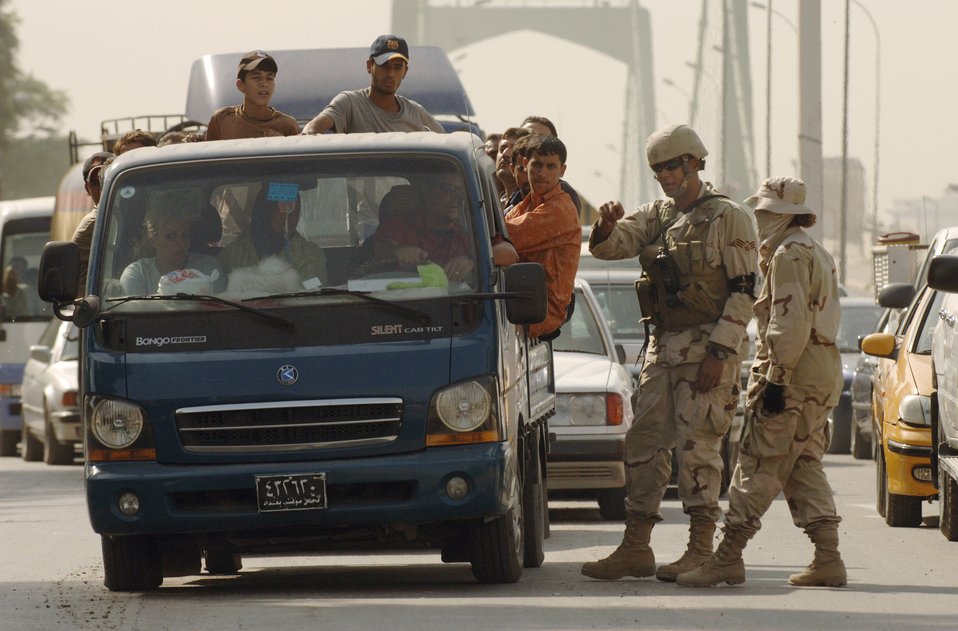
Check Point checking

Patrolling inside Baghdad's International Zone, an Airman and an Iraqi interpreter check drivers and occupants Oct. 12 for current documentation required for travel within the area.